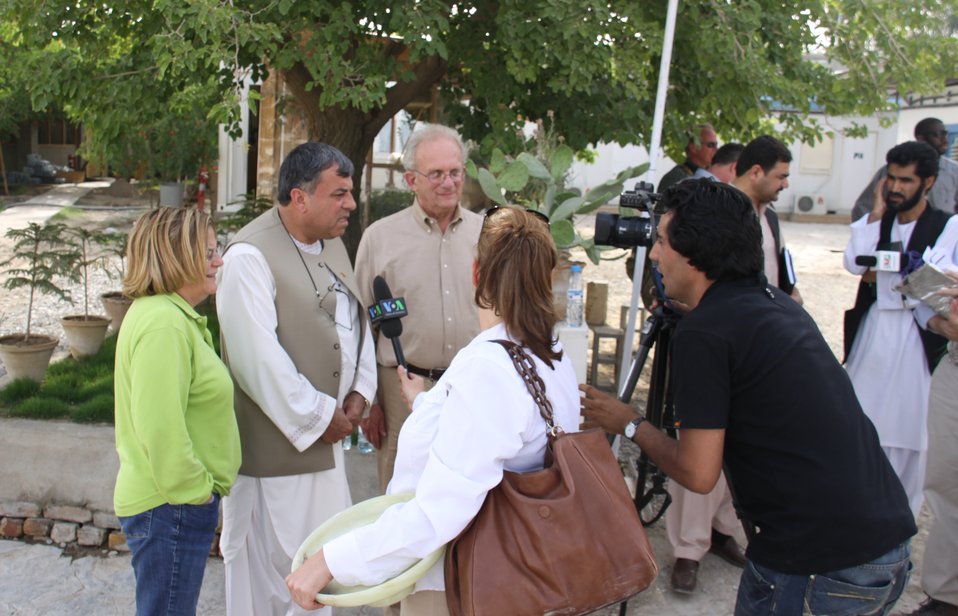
Meeting with Local Leaders in Kandahar